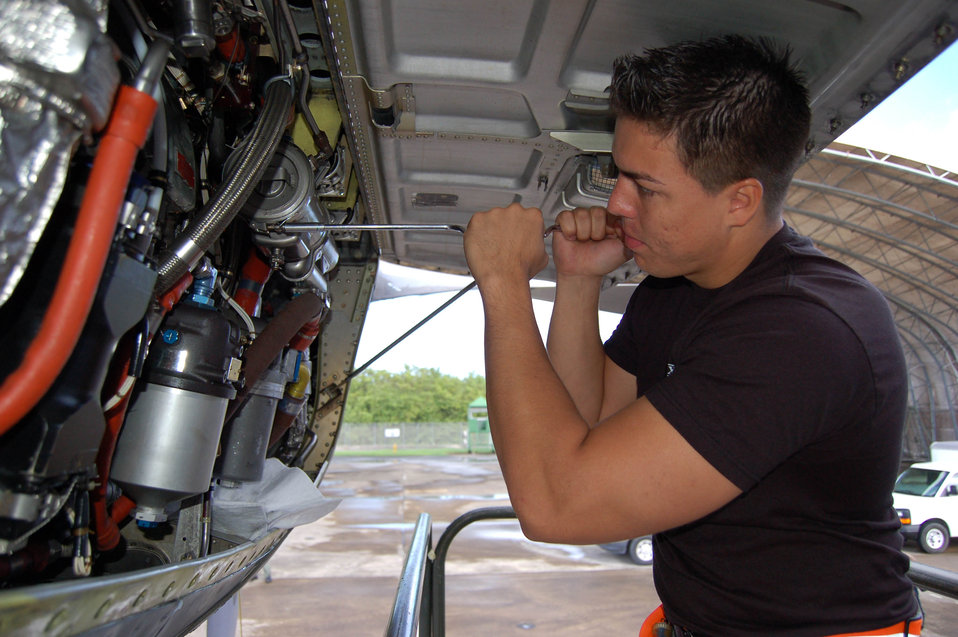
Puerto Rico Airmen support two wars

Senior Airman Ronald Rios loosens the screws holding a fuel filter on a C-130 Hercules engine Dec. 15 at Mu?iz Air National Guard Base, Puerto Rico. The guidance and control systems specialist with the 156th Aircraft Maintenance Squadron, from Trujillo Alto, Puerto Rico, helps maintain the Air Force's oldest C-130s.